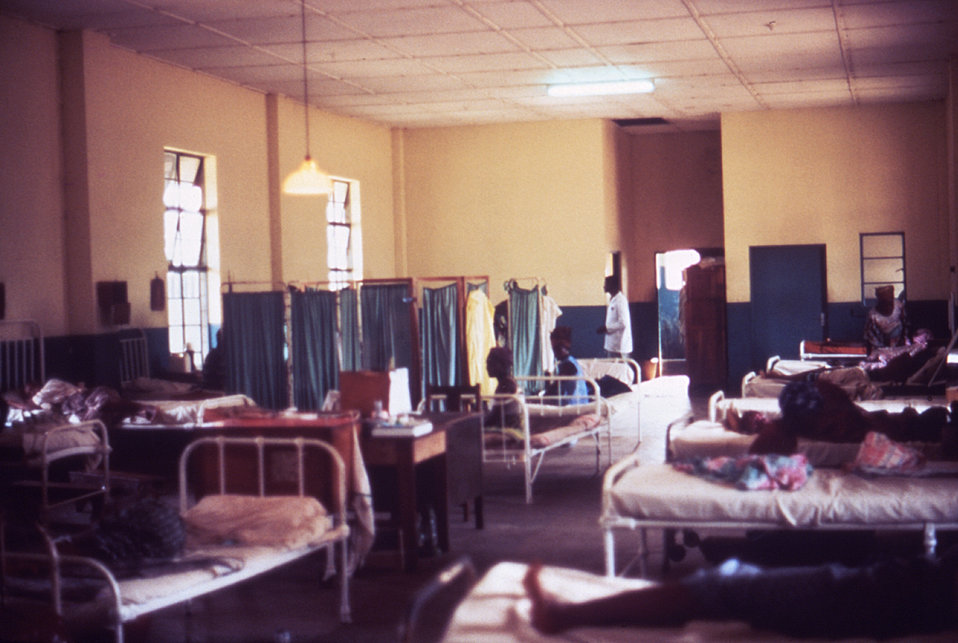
This 1977 image depicts the female hospital ward housing those affected by Lassa fever in Segbwema, Sierra Leone.